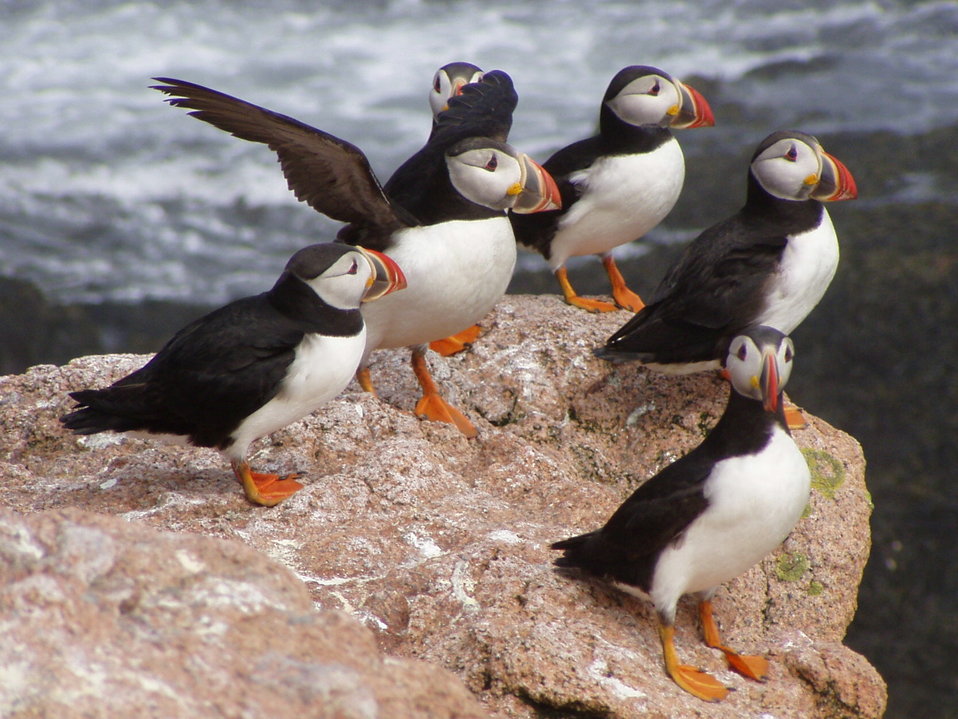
Atlantic puffins at Maine Coastal Island National Wildlife Refuge